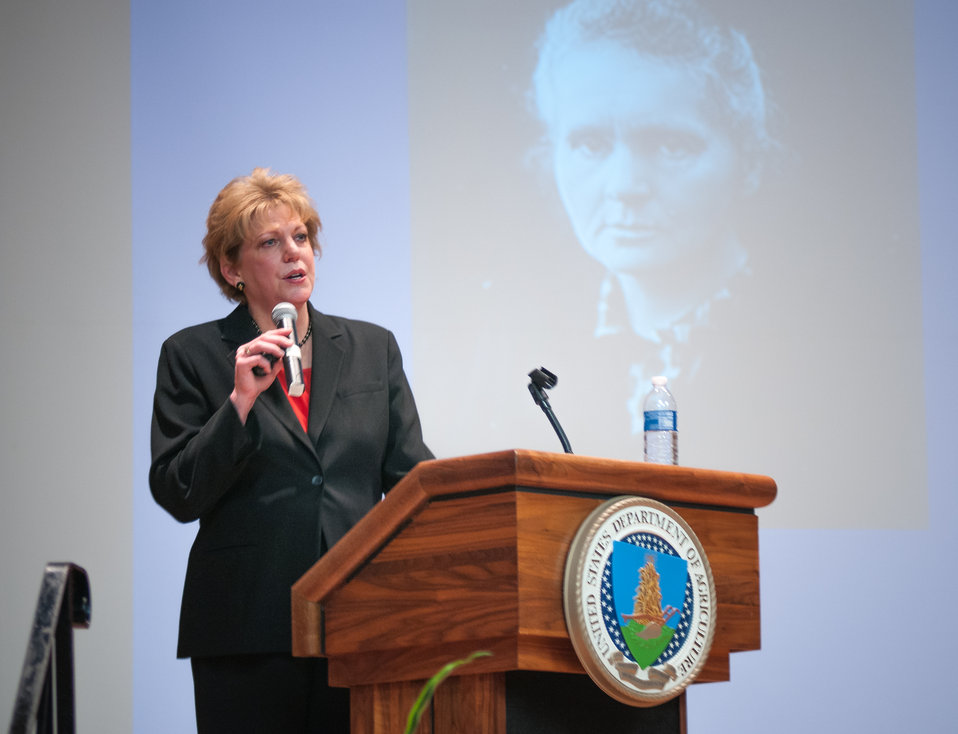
American Association of University Women Executive Director and CEO Linda Hallman, the keynote speaker, during the U.S. Department of Agriculture (USDA) 2013 Women’s History Month Observance event, “Women Inspiring Innovation Through Imagination: Celebrating Women in Science, Technology, Engineering, and Mathematics, Thursday, March 21, 2013, in Washington, D.C. Additional remarks were made by Agriculture Deputy Secretary Dr. Kathleen Merrigan; Administration Deputy Assistant Secretary Deputy Assistant Secretary Robin Heard; and Agriculture Research Service National Programs Associate Administrator Dr. Chavonda Jacobs-Young.